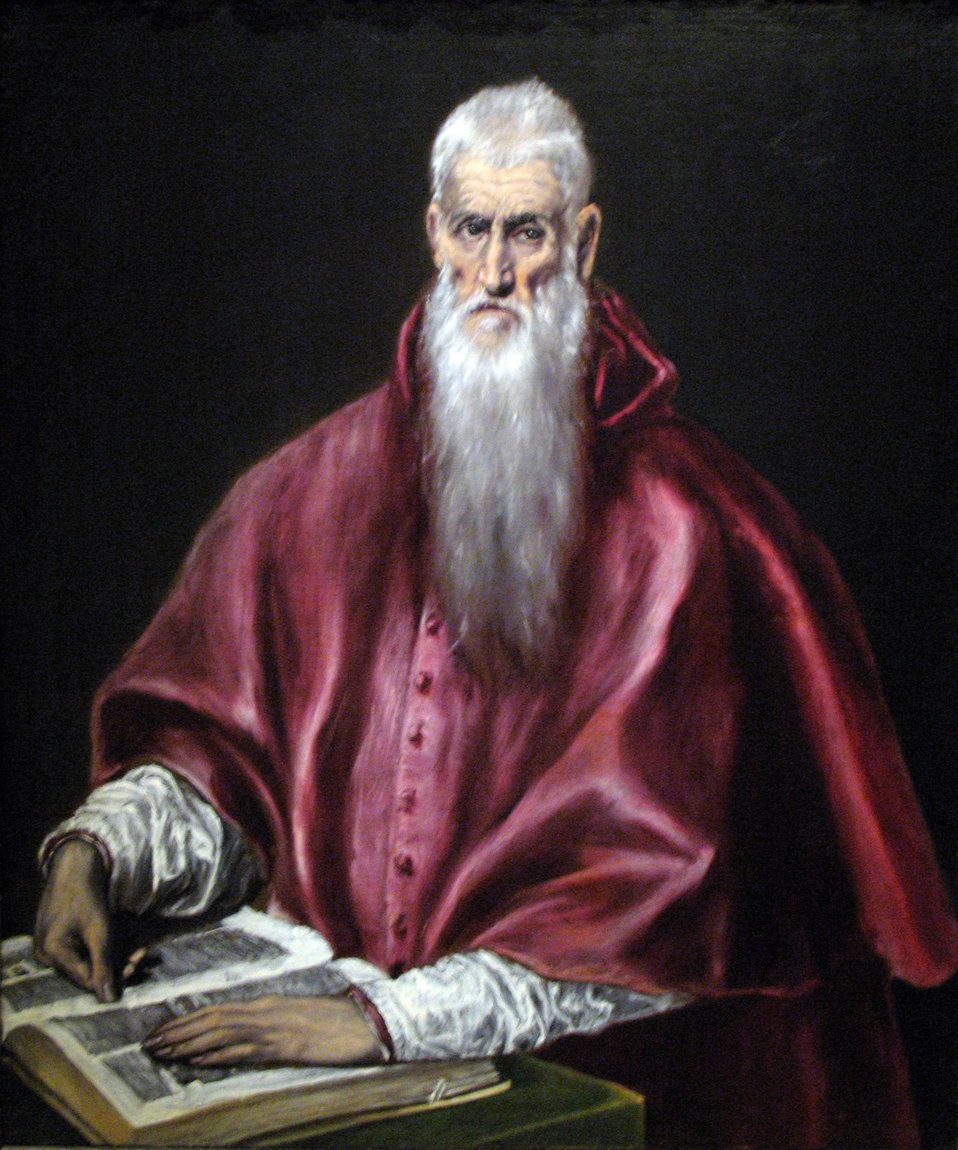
1610 El Greco St. Jerome as Scholar anagoria